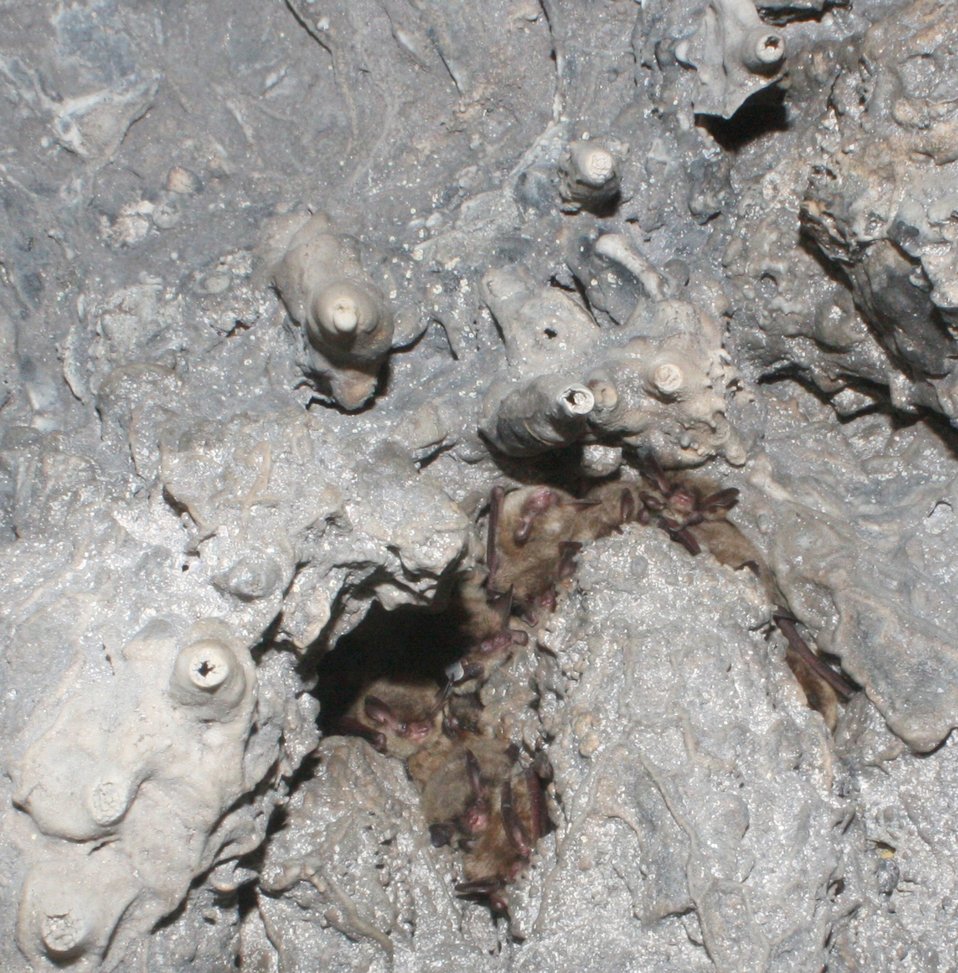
Northern long-eared bats

Myotis septentrionalis